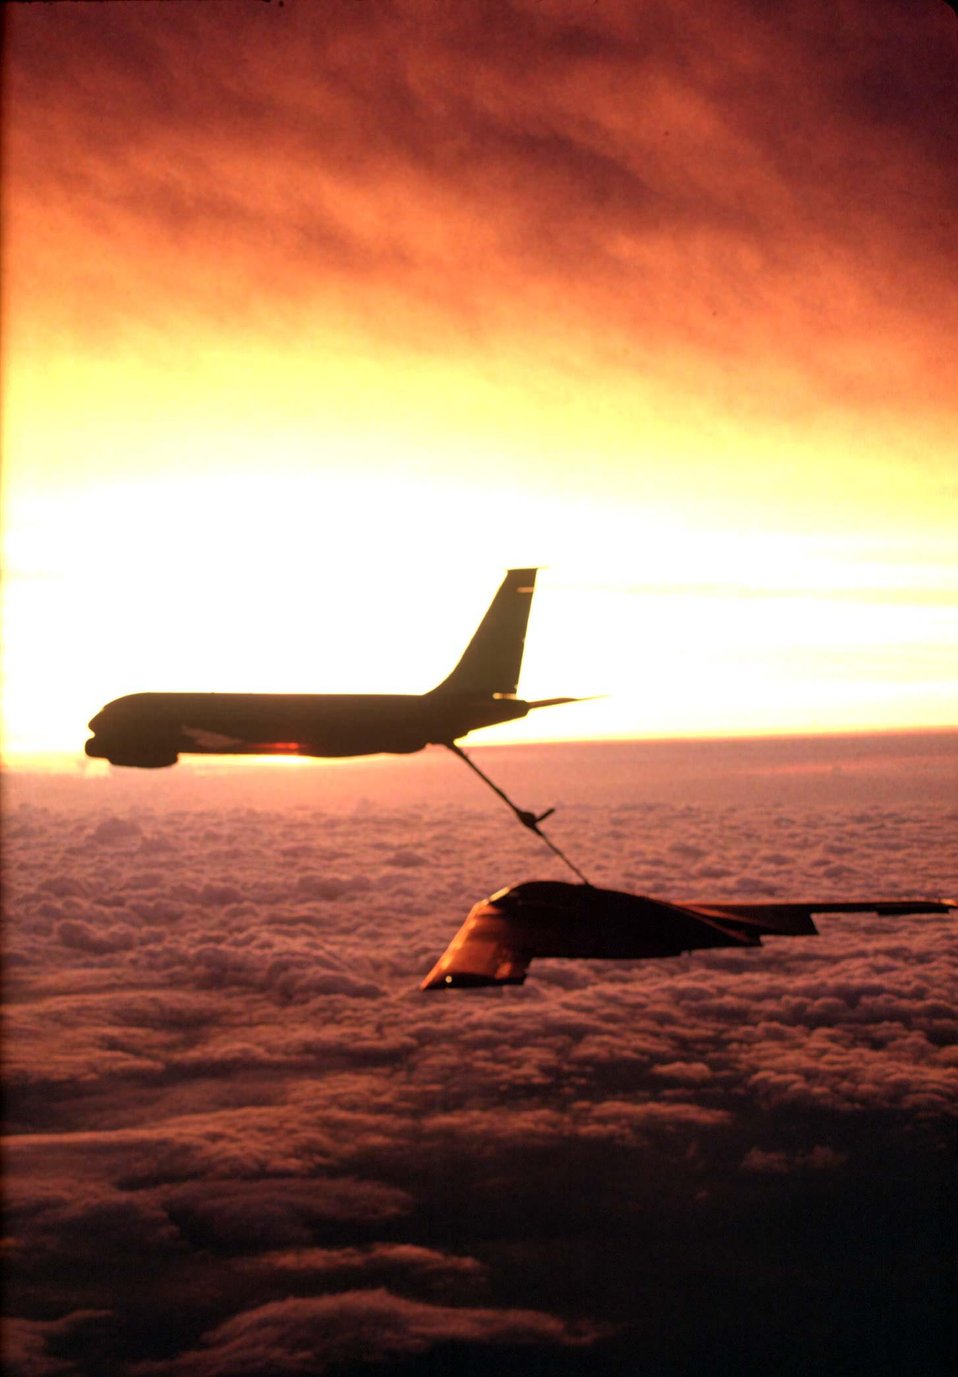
KC-135 refueling a B-2 bomber.